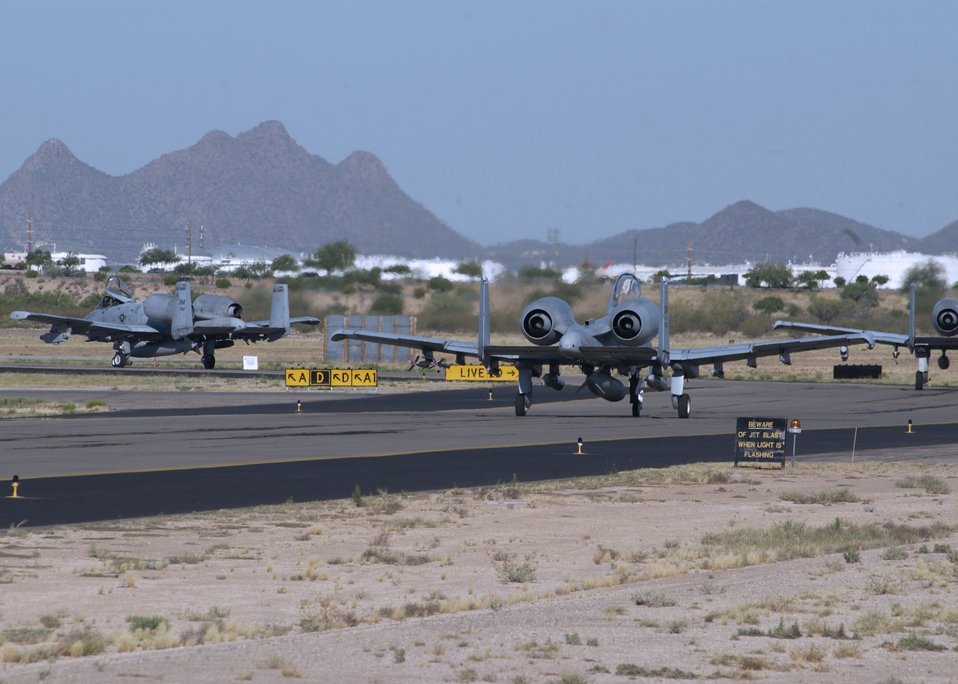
Deploying thunder

DAVIS-MONTHAN AIR FORCE BASE, Ariz. -- A-10 Thunderbolt IIs assigned to the 357th Fighter Squadron here prepare to deploy during a local exercise. The exercise demonstrated the wing's ability to deploy people, equipment and aircraft to support contingency operations.